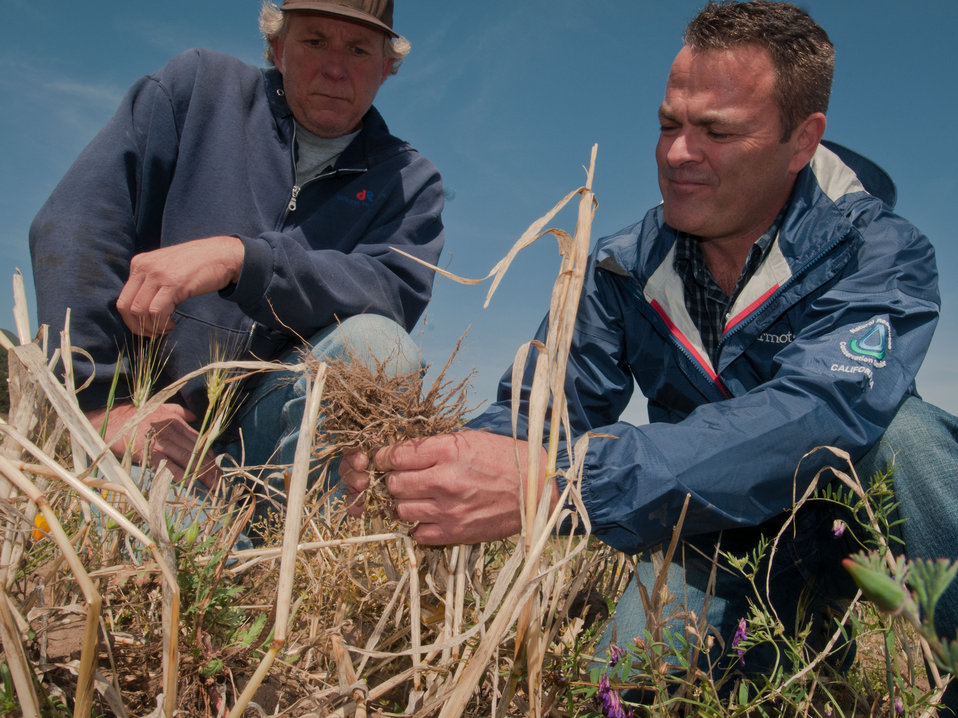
U.S. Department of Agriculture (USDA) Natural Resources Conservation Service (NRCS) Monterey County Conservationist Robert LaFleur (right) pull a hand full of rye so farmer Tom Heess (left) of Leafy Greens Farm can check the health of the roots at this Salinas Valley farm in California on Thursday, June 16, 2011.